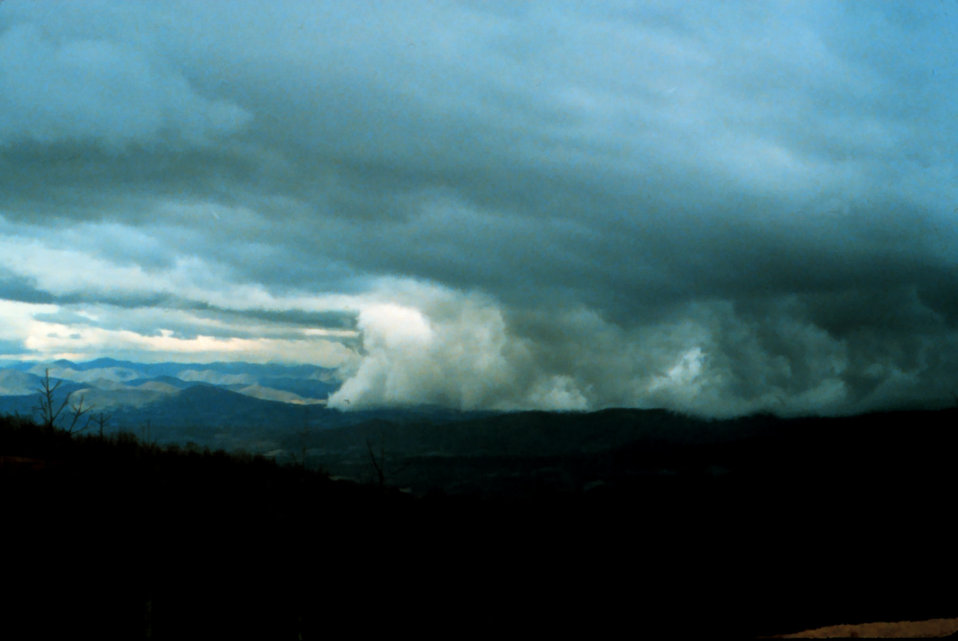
Cloud wall associated with fast moving cold front